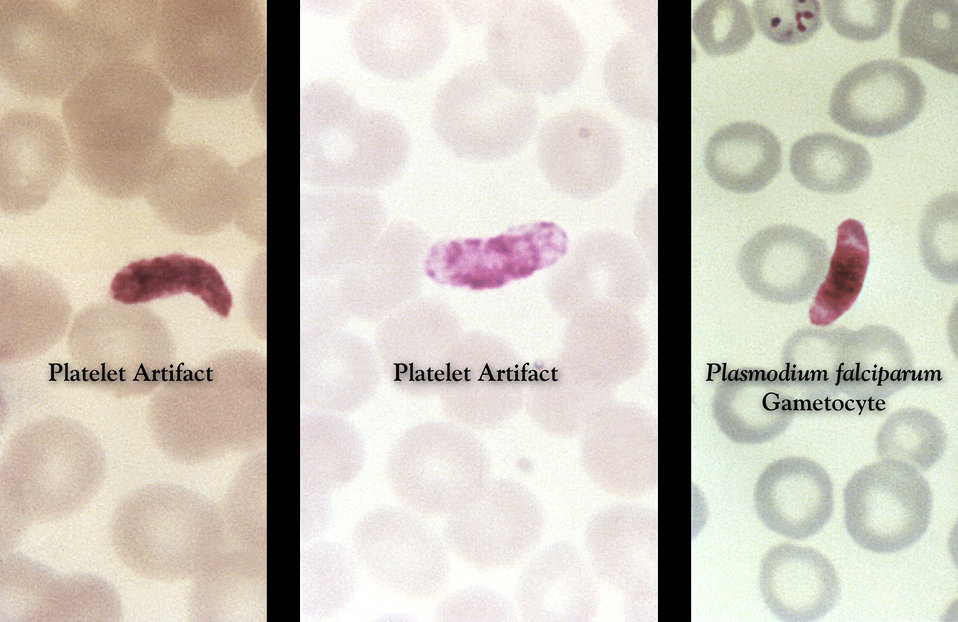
These thin film Giemsa stained micrographs reveal how fused platelets can resemble a Plasmodium falciparum gametocyte.